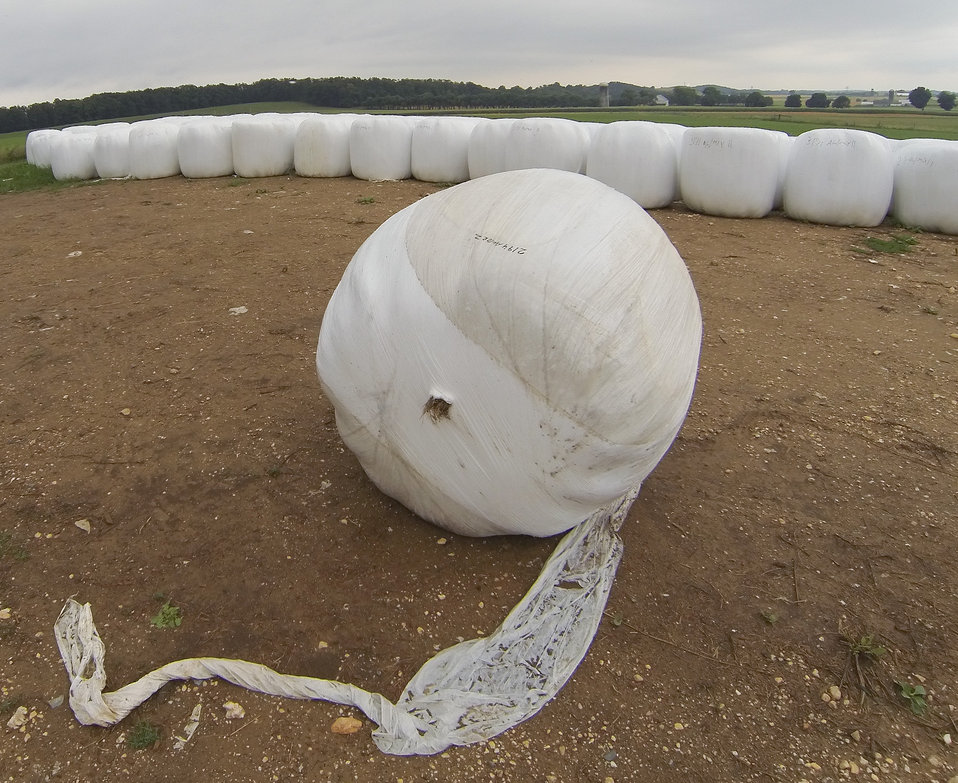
White plastic wrapped bales of pasture grass and alfalfa have been fermenting for months to create sweet silage that stores well and can be used to feed cattle at varying amount all year long at Nick’s Organic Farm is owned by Nick Maravell in Adamstown, MD on Friday, July 12, 2013. The fermentation process improves the taste and increases the vitamin levels in it. The farm produces Black Angus beef, chicken, turkey, eggs, hay, soybeans, corn, alfalfa, orchard grass, rye; and other crops. The cattle are 100% grass-fed receiving certified organic pasture, certified organic hay (in winter), water and mineral salts mixed with sea kelp. The cattle are not fed hormones, antibiotics or animal products. Poultry feed from grain is ground from organic grain. The poultry also graze on organic pastures. The farm has conducted on-farm research with federal, state and non-profit agencies to refine organic practices. An organization such as the U.S. Department of Agriculture (USDA) Agricultural Research Service (ARS) center in Beltsville has been able to conduct research to improve organic crops and to breed and manage the cattle so that they have.